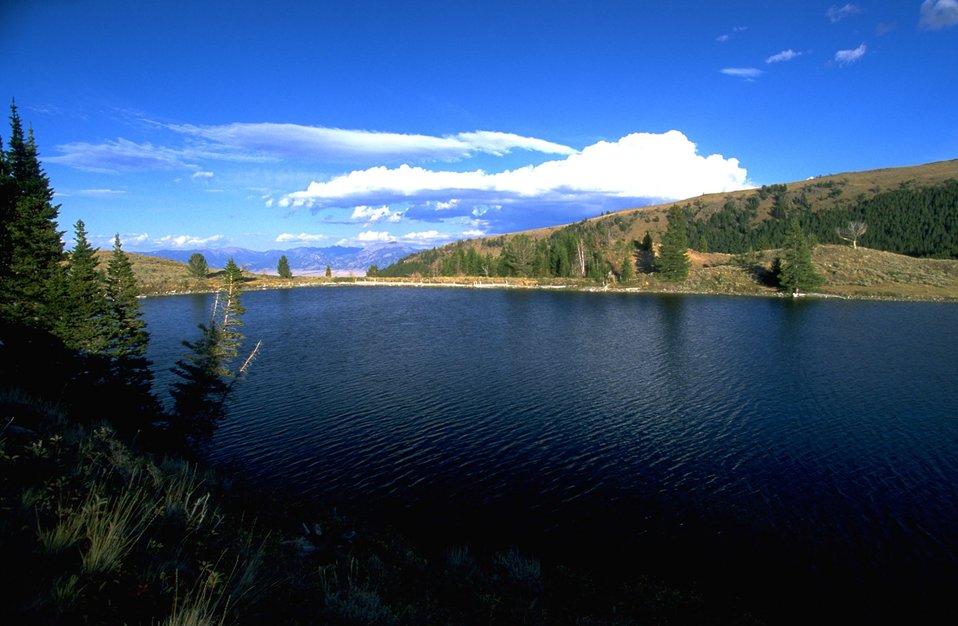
Axolotl Lake with the Spanish Peaks in the background